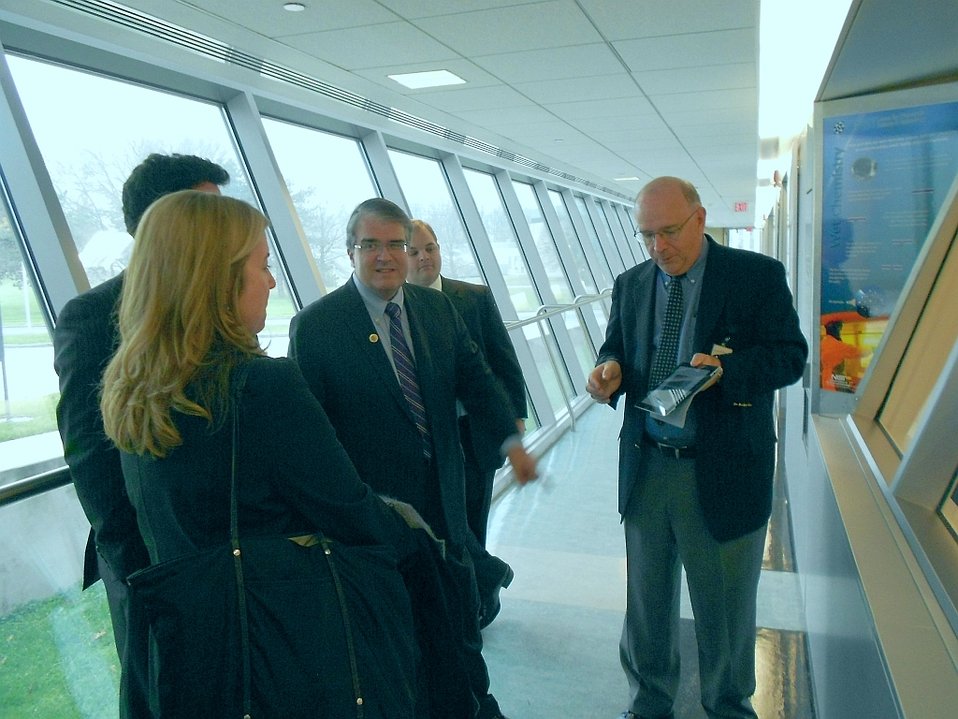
U.S. Representative Culberson Visit

NIST Center for Nanoscale Science and Technology (CNST) Robert Celotta (right) briefs U.S. Representative John Culberson of Texas (center) and his staff on nanoscale measurement and fabrication methods.